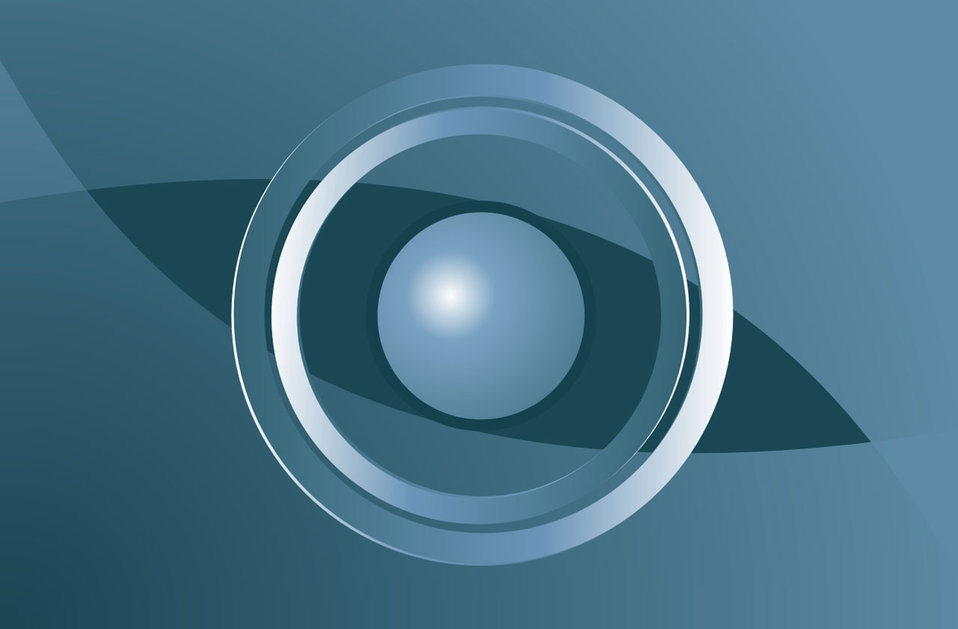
Eye of the ocean

Blue background.